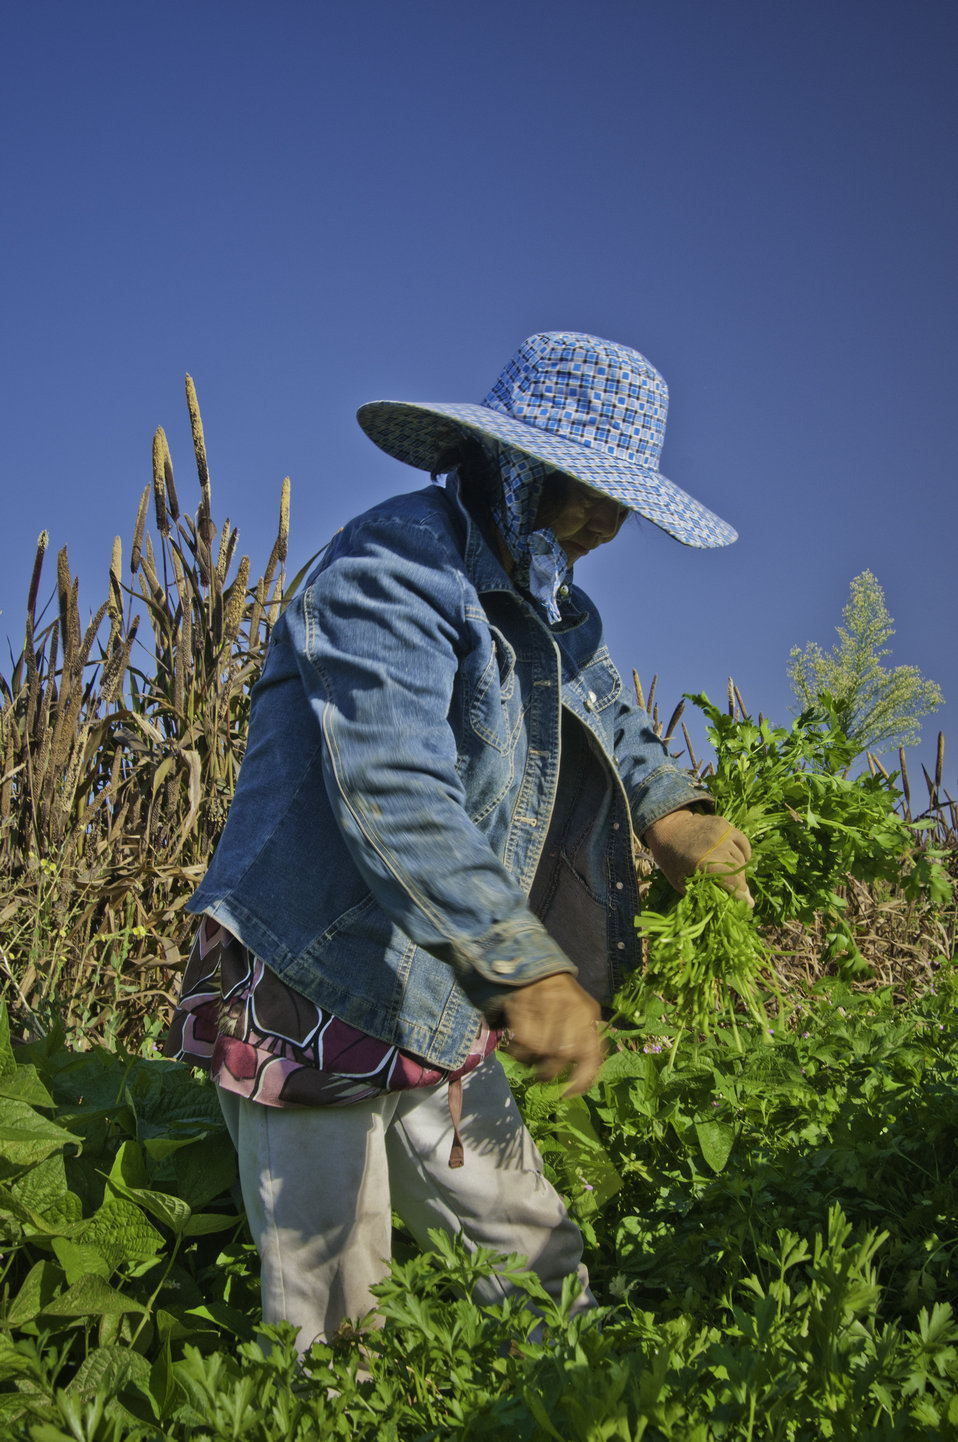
May Young Vu a Hmong farmer harvesting cilantro on her farm May's Flower's in Sanger, California on Thursday, August 29, 2013.